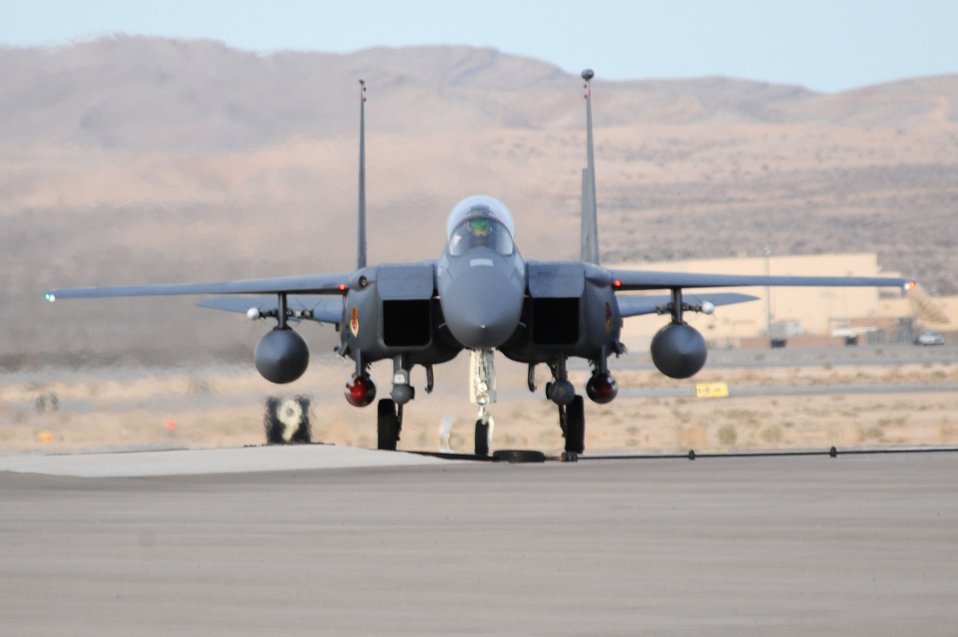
Red Flag

An F-15E Strike Eagle from the 366th Fighter Wing at Mountain Home Air Force Base, Idaho, taxis in after arriving at Nellis AFB, Nev., Feb 20 for Red Flag 09-3. Red Flag is a multinational exercise providing a realistic environment to practice combat scenarios.